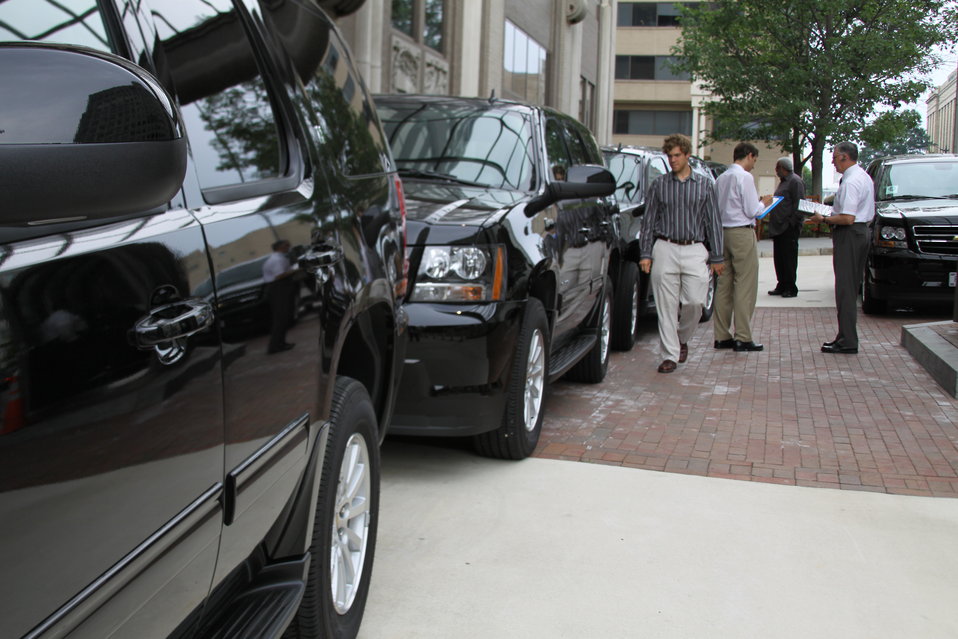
Tahoes 012